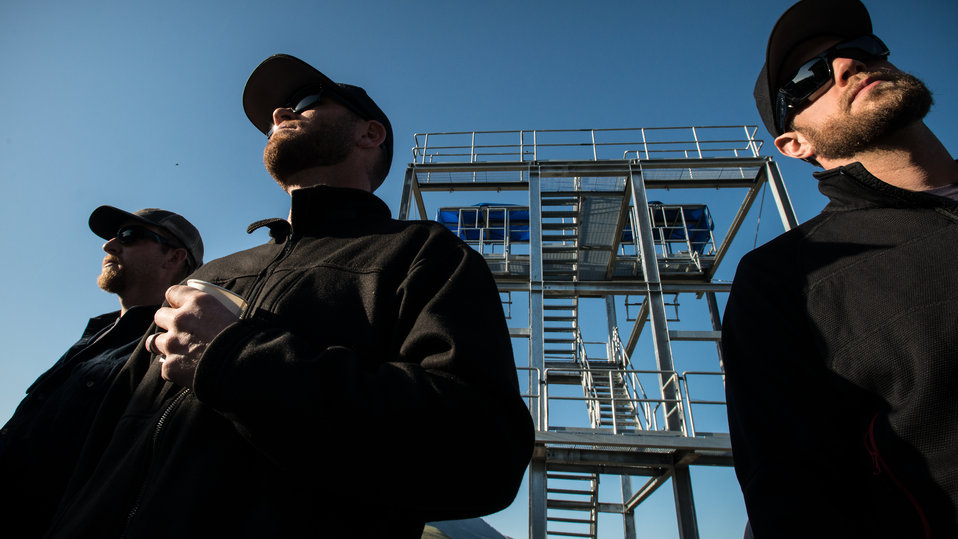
One of the two 40-foot rappel training towers looms over veteran wildland firefighter rappelers during a safety meeting, at the U.S. Department of Agriculture's (USDA) U.S. Forest Service (USFS) National Helicopter Rappel Program’s Rappel Academy at Salmon Air Base in Salmon, ID on Wednesday, May 14, 2014. From May 12, 2014, 72 veteran rappellers from all over the nation, 30 support staff, and three helicopters with flight crews attend the training at Salmon Air Base. Participants will rappel into the Perreau Creek area. The annual training is delivered in accordance with the National Rappel Operations Guide; strengthen leadership, teamwork, and communications within the rappel community, and produces quality aerial delivered firefighters for use in fire and aviation operations. The USDA Forest Service National Helicopter Rappel Program’s primary mission is initial attack. Rappel crews may be utilized for large fire support, all hazard incident operations, and resource management objectives.